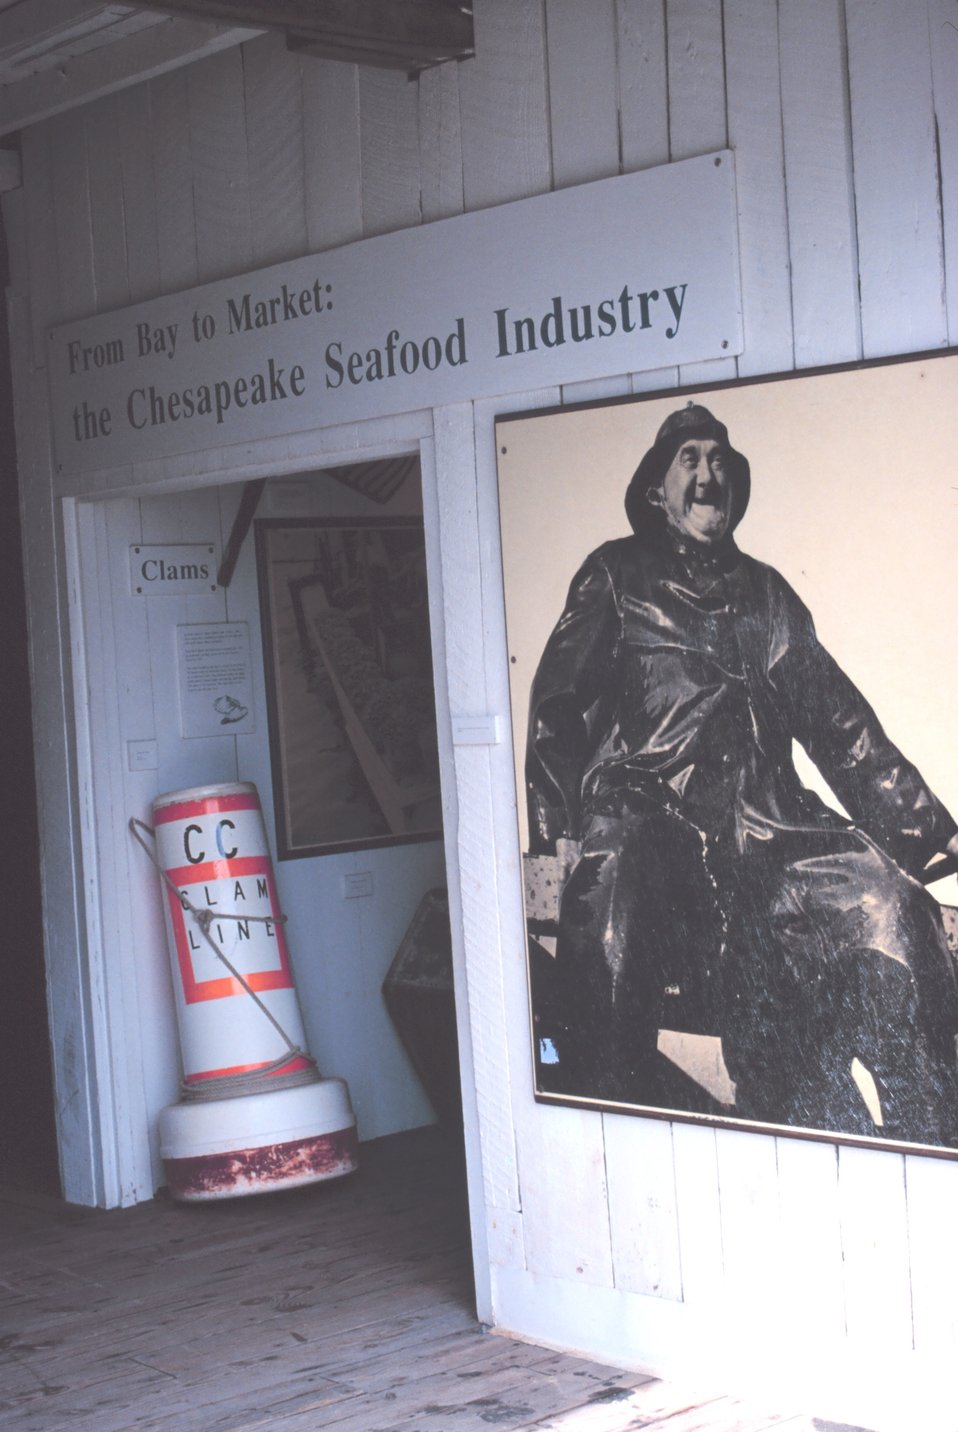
A section of the Chesapeake Bay Maritime Museum at St. Michael's, Maryland.